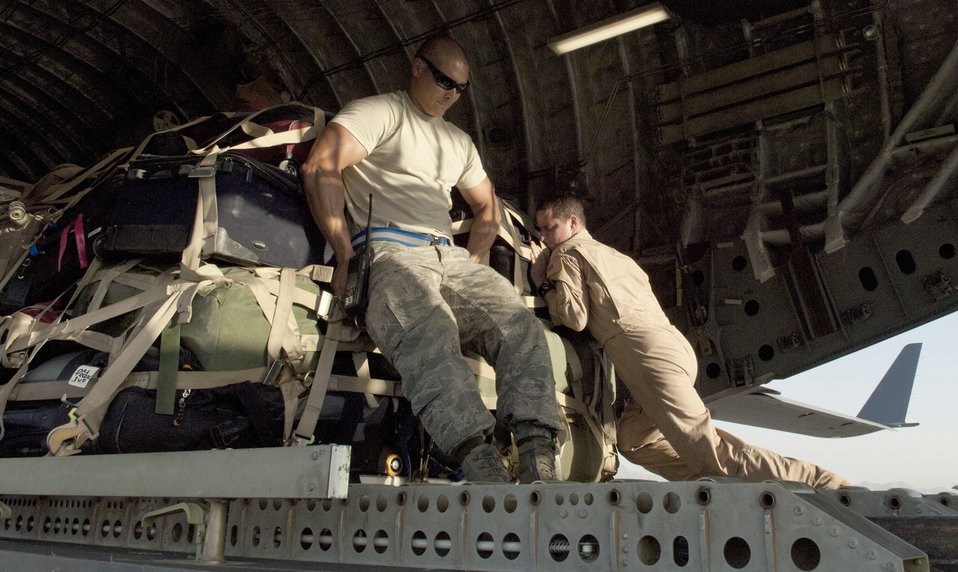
Loading a C-17

Staff Sgt. Robert Kellen and Staff Sgt. Dough Mathes push a pallet onto a C-17 Globemaster III June 13, 2011, at Bagram Airfield, Afghanistan. Sergeant Kellen is assigned to the 455th Expeditionary Aerial Port Squadron. Sergeant Mathes is assigned to the 816th Expeditionary Airlift Squadron.